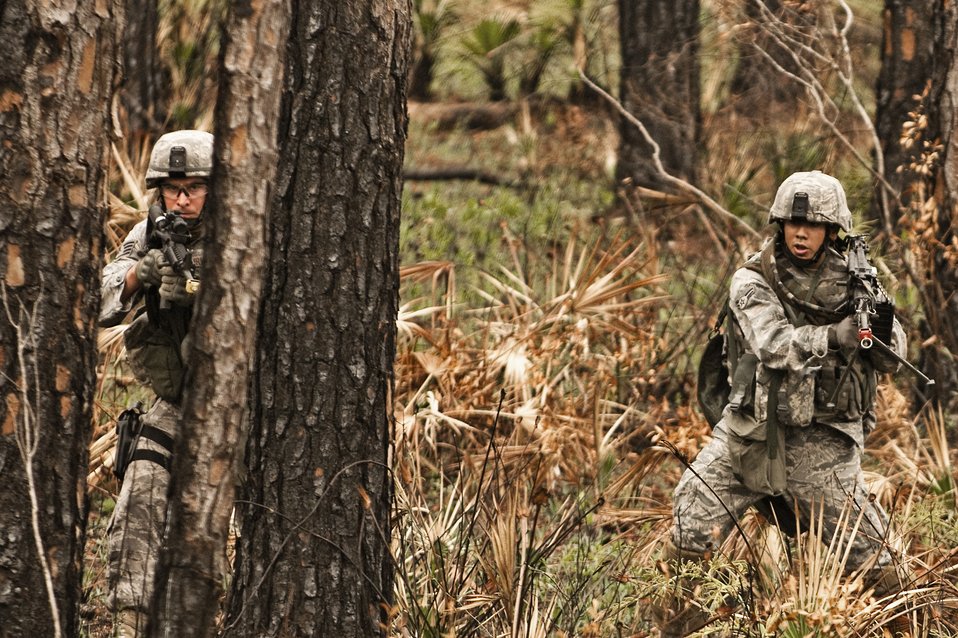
Freeze!

Members of the Florida Air National Guard's 125th Security Forces Squadron perform patrols March 29, 2011, during a field training exercise at Camp Blanding Joint Forces Training Center, Fla.